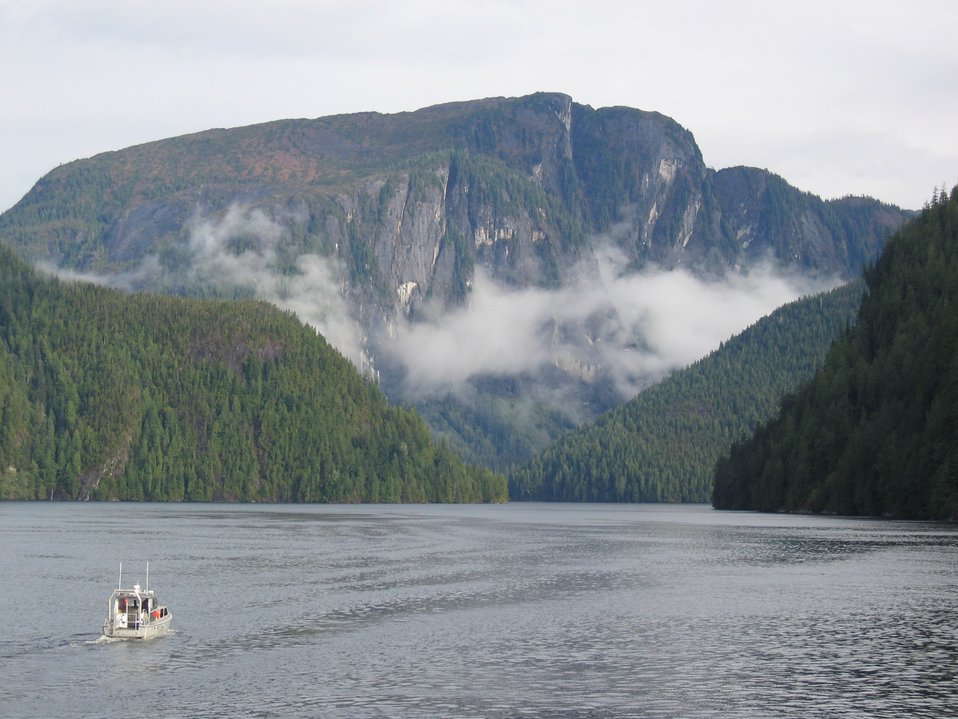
NOAA Ship RAINIER survey launch headed out for a day's work in the Rudyerd Bay area. What a great place to work.